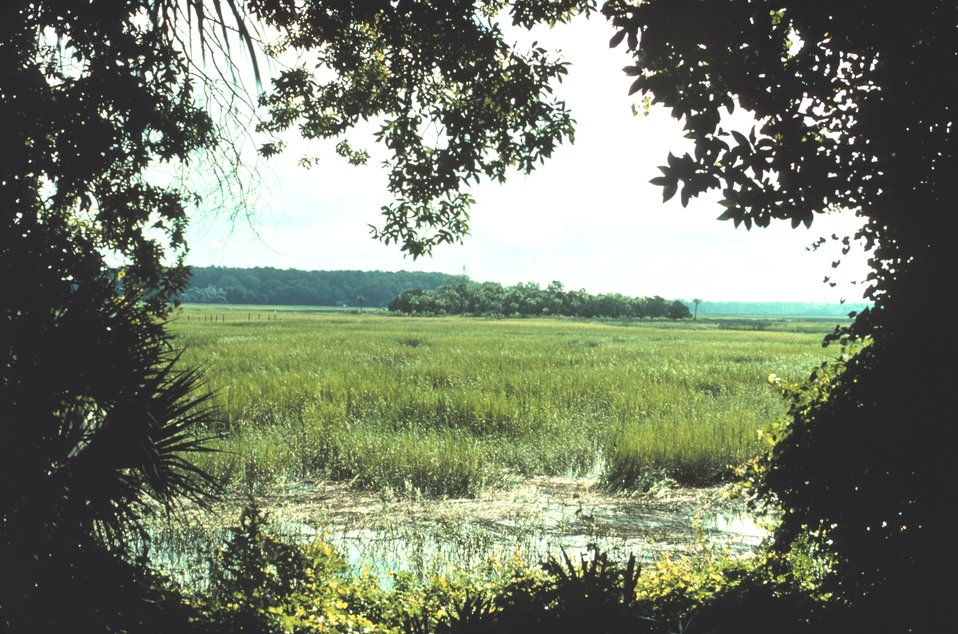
A wide expanse of salt marsh with a forested hammock in the center of the photo.